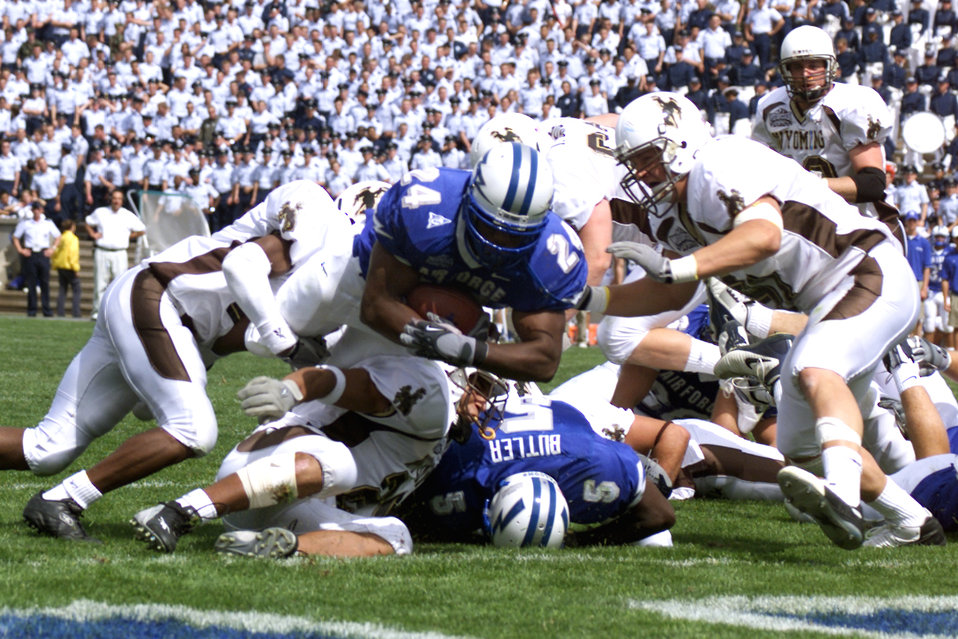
Smashing up the middle

U.S. AIR FORCE ACADEMY, Colo. (AFPN) -- Air Force fullback Adam Cole fights his way into the end zone to put the Falcons up 21-6 over the Wyoming Cowboys. Air Force went on to beat Wyoming 35-29 and advance to 4-0. The Falcons next face Brigham Young University on Sept. 27.